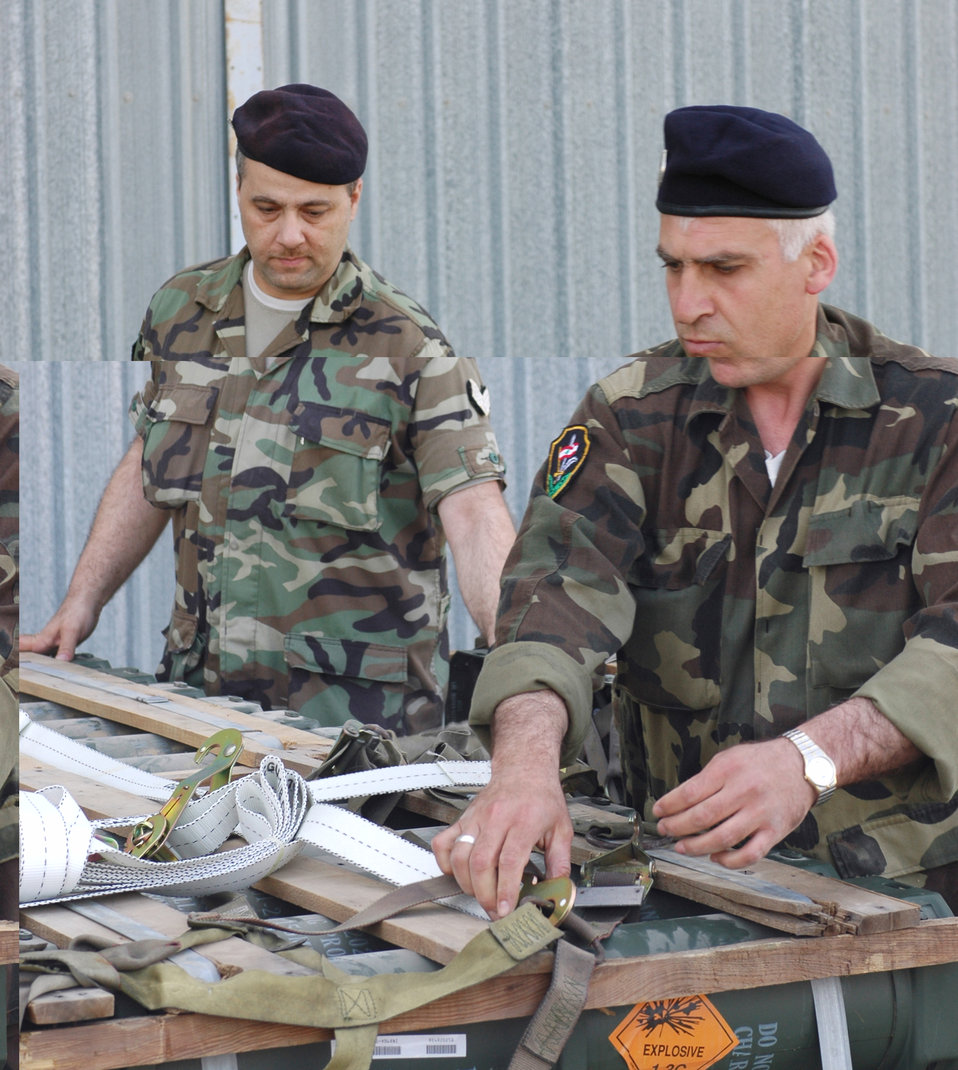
Airmen deliver strategic aid to Lebanese military

Two Lebanese soldiers unload ammunition delivered by the 816th Expeditionary Airlift Squadron May 26. The C-17 Globemaster III is capable of rapid delivery of troops and cargo to any location worldwide. The 816th, from their strategic location in Southwest Asia, maintained operations in Iraq and Afghanistan while supporting the effort to re-supply the Lebanon Armed Forces. The squadron has flown about 850 sorties in May, to include the ammunition re-supply mission, cargo and passenger movement and Joint Precision Guided Air Drops.